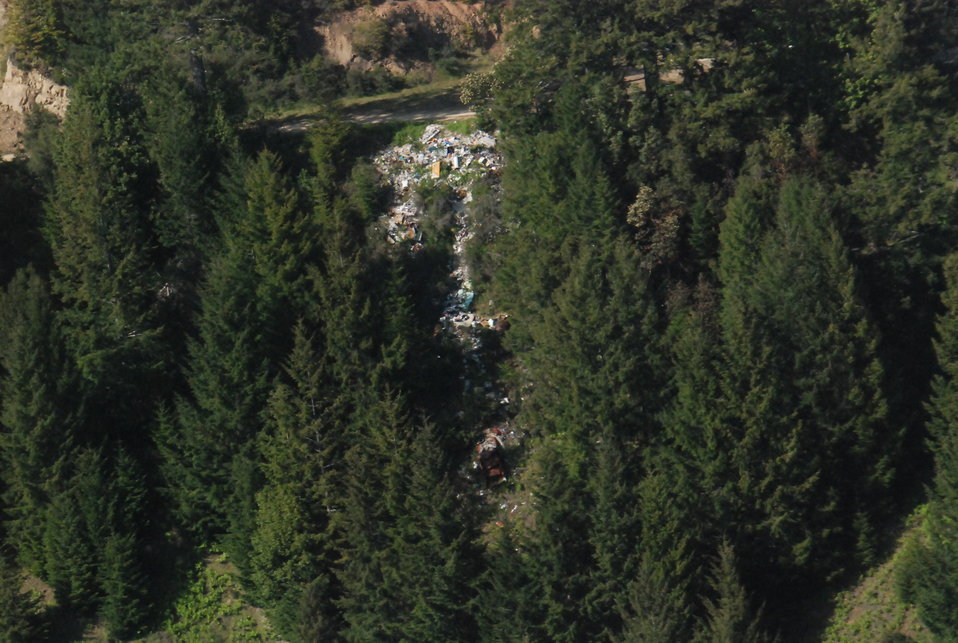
Garbage illegally dumped approximately 2,500 feet above Mettah Creek

The garbage here has been accumulating for more than 20 years. It was illegally dumped approximately 2,500 feet above Mettah Creek, a designated critical salmon habitat that flows into the Klamath River in Northern California.

Clean-up activities near the Johnson’s dump are delayed for a pair of nesting Northern Spotted Owls. The Northern Spotted Owl is listed as threatened under the Endangered Species Act.

The California Integrated Waste Management Board and the Yurok Tribe will begin clean up of this site approximately in late September 2009, after the Northern Spotted Owl breeding cycle ends.